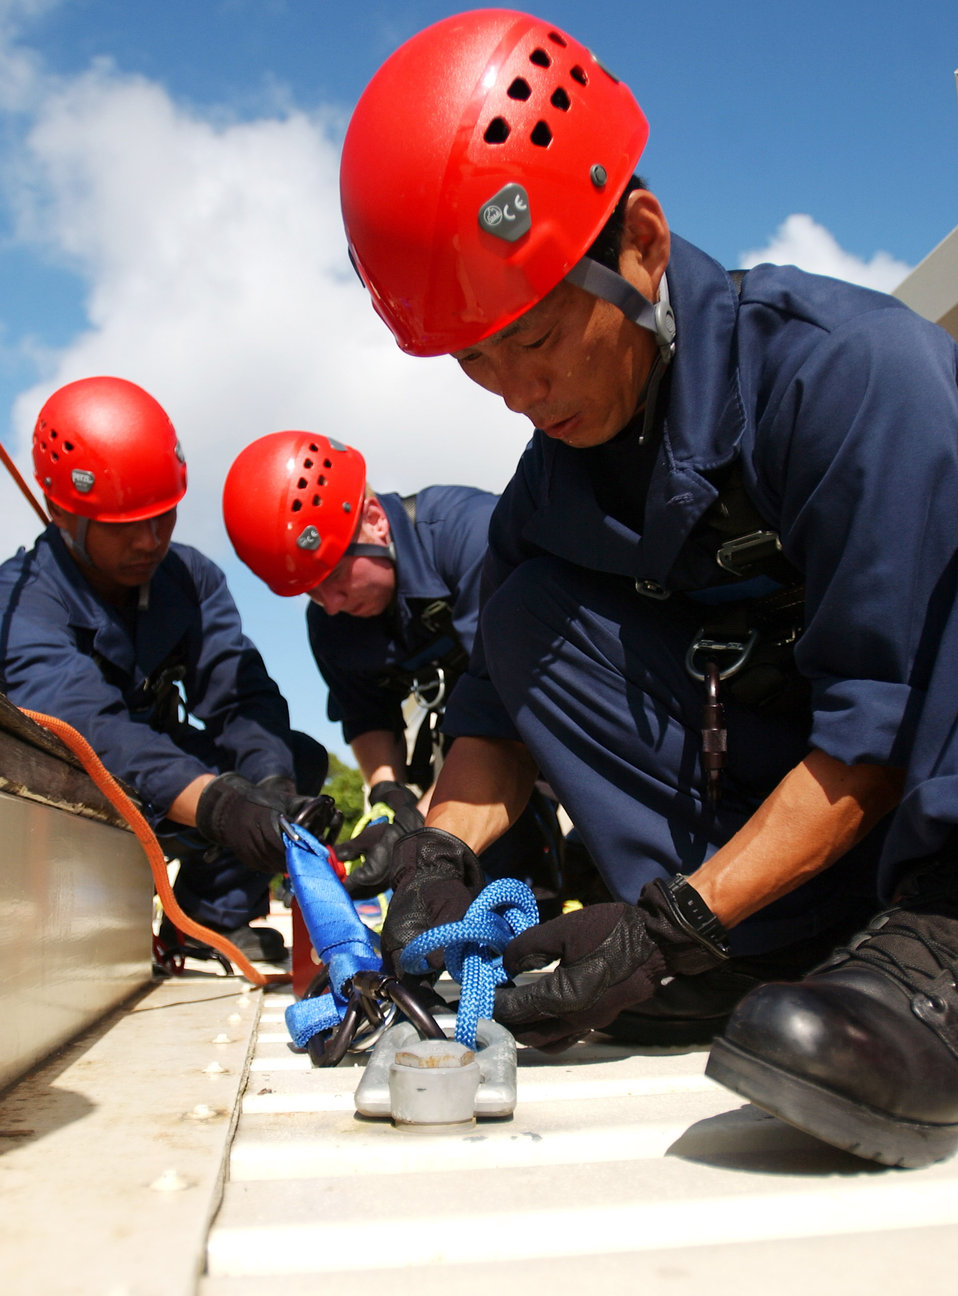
Saving lives, money

Taepyong Chae secures and tests an anchor point used during a rescue situation at Kadena Air Base, Japan, June 17. Mr. Chae is a firefighter from the 51st Civil Engineer Squadron at Osan AB, Republic of Korea.